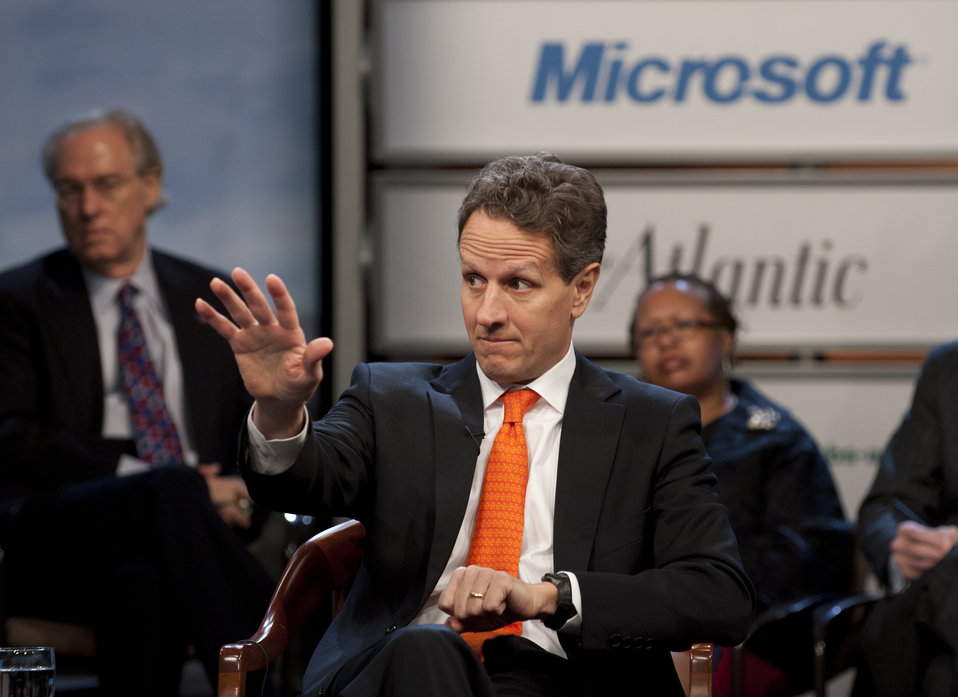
The Atlantic’s “Finding Work, Finding Our Way: Building the Economy and Jobs of the Future” town hall event, 2/9/2011

During The Atlantic’s “Finding Work, Finding Our Way: Building the Economy and Jobs of the Future” town hall event, Secretary Geithner highlighted the importance of growing the economy, creating employment opportunities, and strengthening U.S. competitiveness.